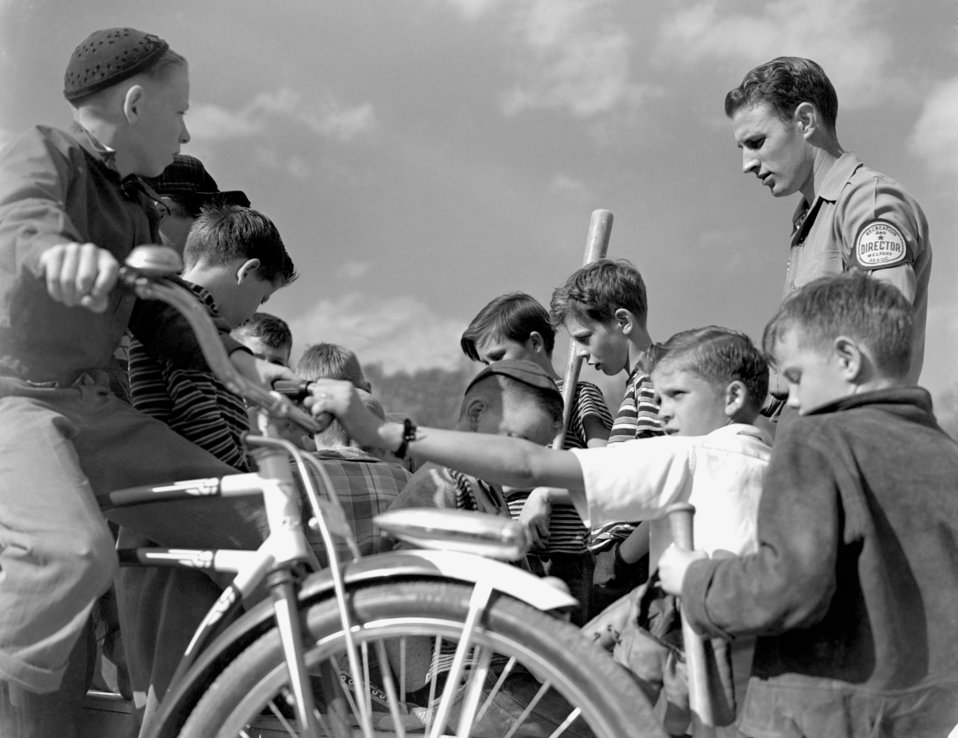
Playground Activity for Recreation Welfare Oak Ridge 1947

3414-12c DOE photo Ed Westcott 4-17-1947 Oak Ridge Tennessee